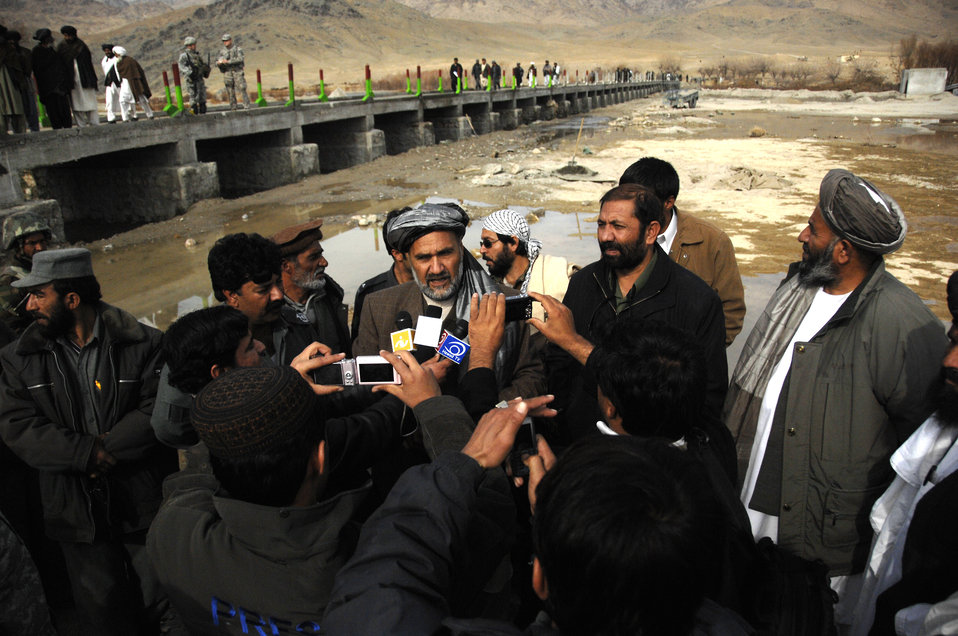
American servicemembers bridge gap between Afghan provinces, relationships

Zabul Provincial Governor Mohammad Ashraf Naseri answers questions from the Afghan media and explains the importance of the Arghandab Bridge Dec. 26, 2009, at Zabul Province, Afghanistan. This bridge provides access to the northern part of the province, allowing people to transport food and supplies during winter months as water levels are high during that season.